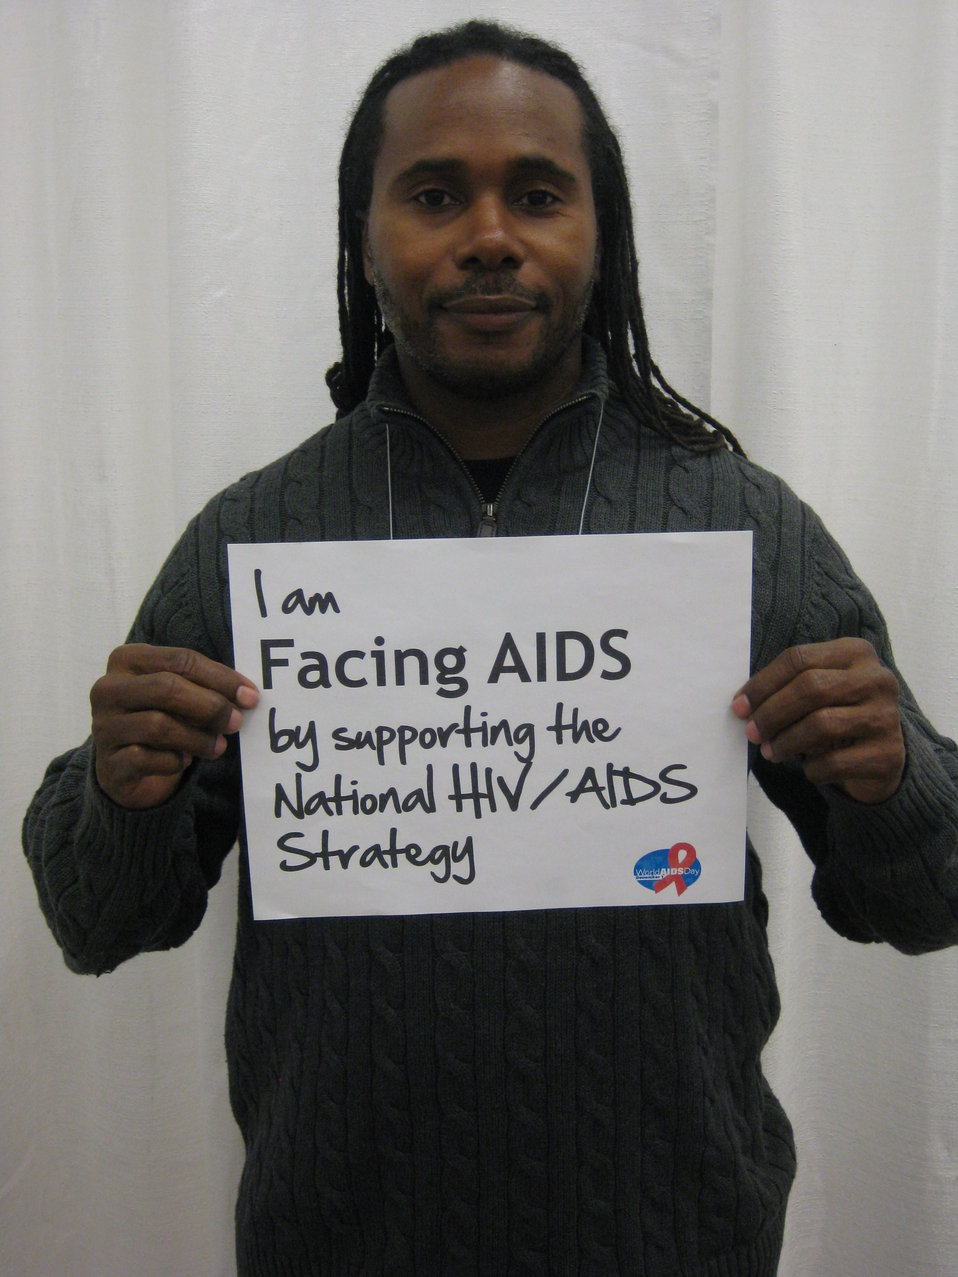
I am supporting the National HIV/AIDS Strategy

FACING AIDS at the HIV Prevention Leadership Summit 2010 in Washington, DC.